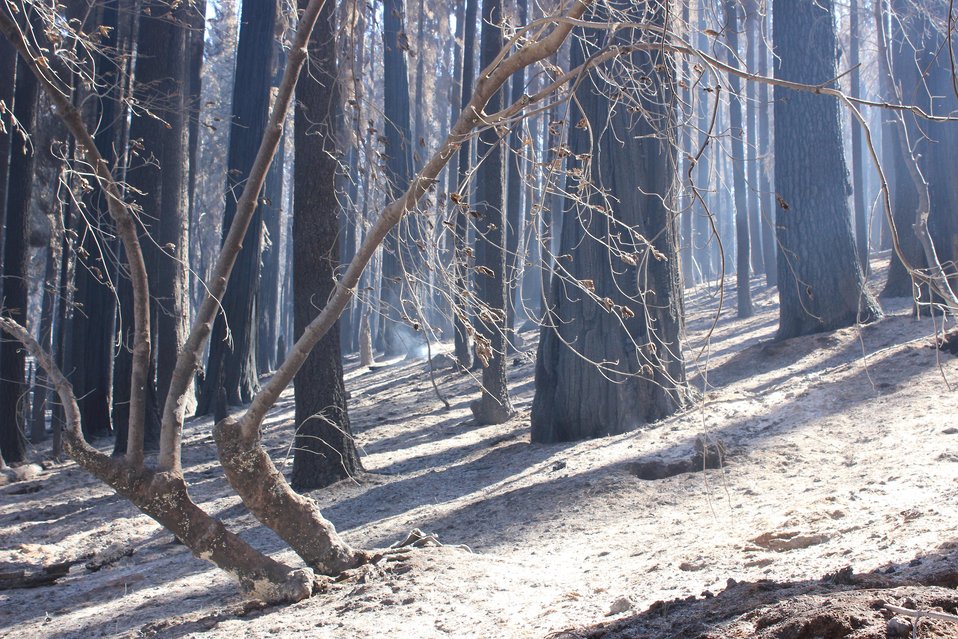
Burned trees and ash covered forest floor show the devastation caused by the Rim Fire. The Rim Fire in the Stanislaus National Forest near in California began on Aug. 17, 2013 and is under investigation. The fire has consumed approximately 253,332 acres and is 80% contained.